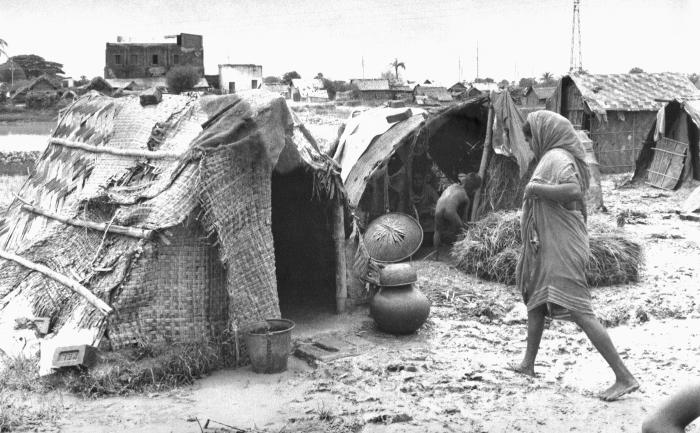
These were temporary 'homes' that had been constructed alongside a river inside a Bangladesh rural community. Groupings of makeshift tent dwellings like this are known as a 'bastee'. The bastee was a place where no governmental facilities were present, and where poverty ran rampant. This photograph provided by Dr. Stan Foster, and captured by Pierre Claquin, M.D., B.A.C., who at the time was a member of the World Health Organization's Smallpox Eradication Program. It was part of a series photographed by former E.I.S. officer, Stanley O. Foster M.D., M.P.H., and was one of a series entitled 'The Story of One Smallpox Jeep', which depicted the travails faced by the jeep, and its occupants of public health practitioners, as they road through the Bangladesh countryside in an attempt to eradicate smallpox from the country.